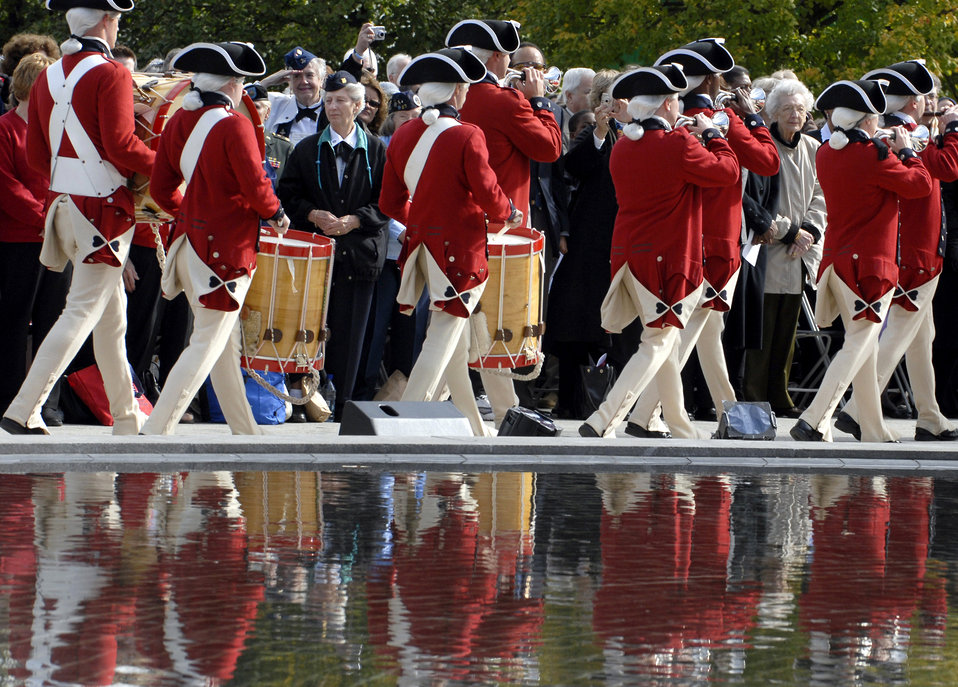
10th anniversary of WIMSA

The U.S. Army Old Guard Fife and Drum Corps and the Armed Forces Color Guard post the colors during the ceremony Nov. 3 celebrating the 10th anniversary of the Women in Military Service for America Memorial at Arlington National Cemetery.